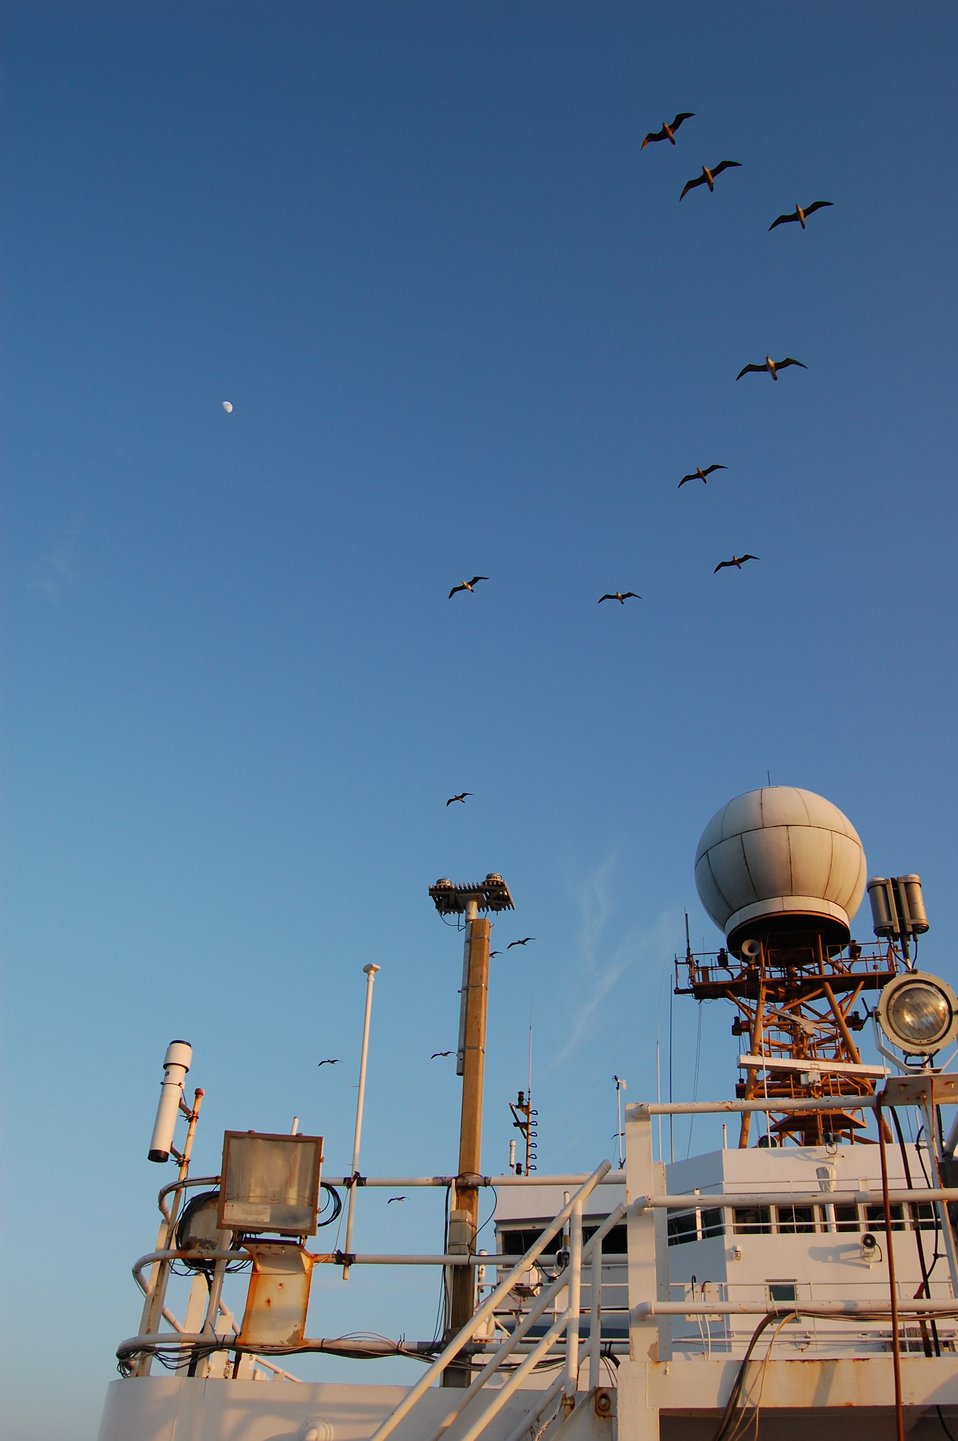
A contingent of red-footed boobies keeping pace with the NOAA Ship Ronald H. Brown near sunset. Half-moon seen to the left.